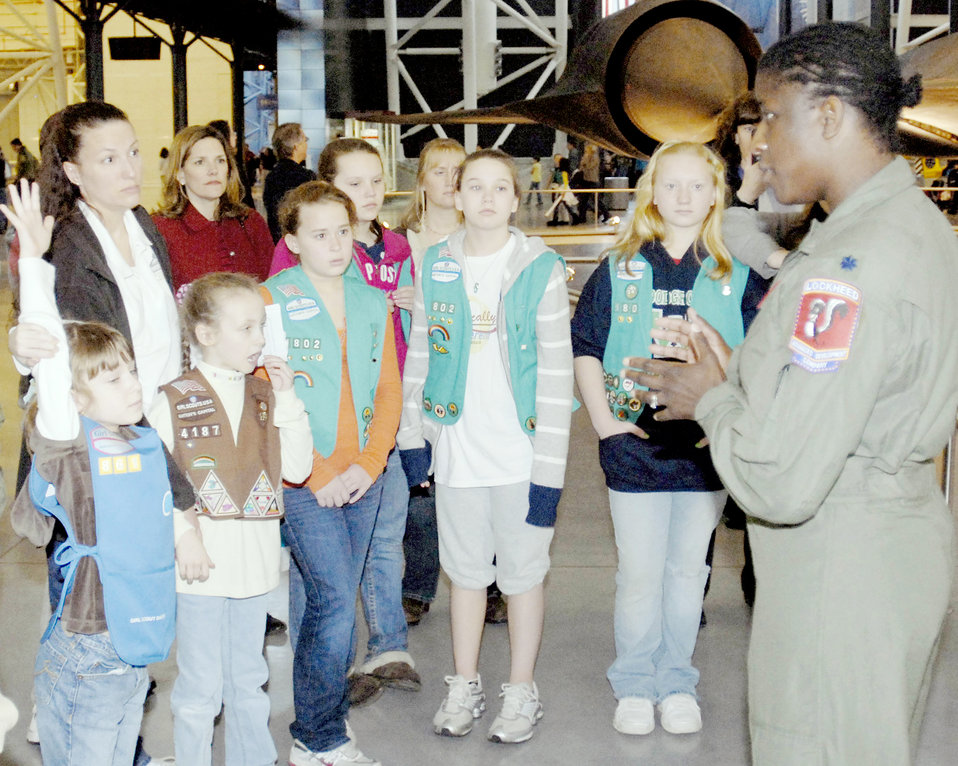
Women in Aviation and Space Family Day

Lt. Col. Merryl Tengesdal answers questions about being a U-2 pilot during the annual Women in Aviation and Space Family Day at the National Air and Space Museum Udvar-Hazy Center in Chantilly, Va., March 13, 2010. Airmen had the chance to talk to young girls about being female aviators. Colonel Tengesdal is the Detachment 2 commander for flight testing at Edwards Air Force Base, Calif.